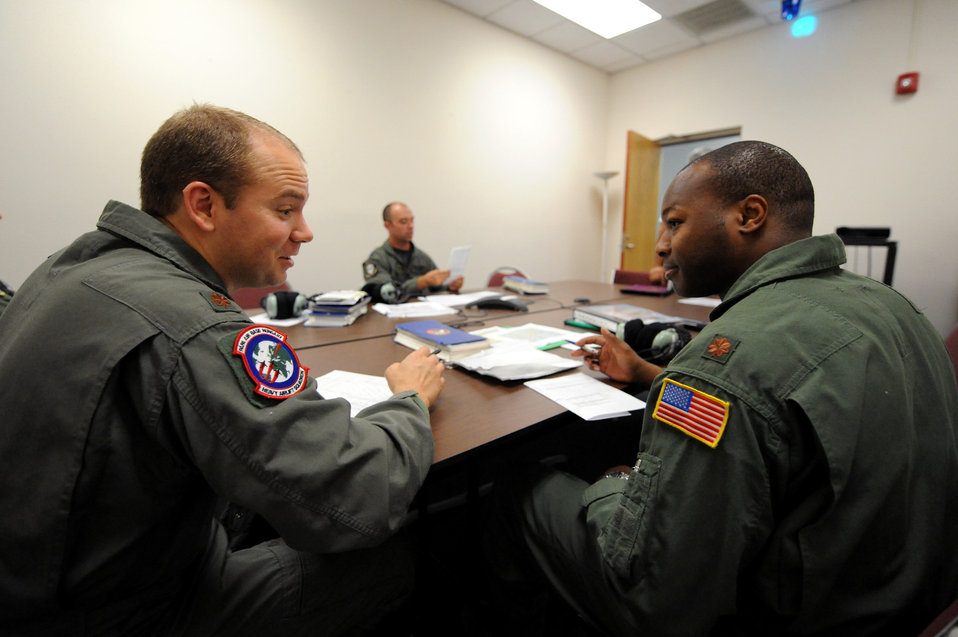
Multinational wing

Maj. Brian Nicosia discusses details on flight plans with Maj. Patrick Brady-Lee prior to flying in the C-17 Globemaster III simulator June 21, 2010, on Joint Base Charleston, S.C. Major Nicosia is the chief of tactics with the Heavy Airlift Wing at Papa Air Base, Hungary, and is visiting Joint Base Charleston for quarterly pilot training.